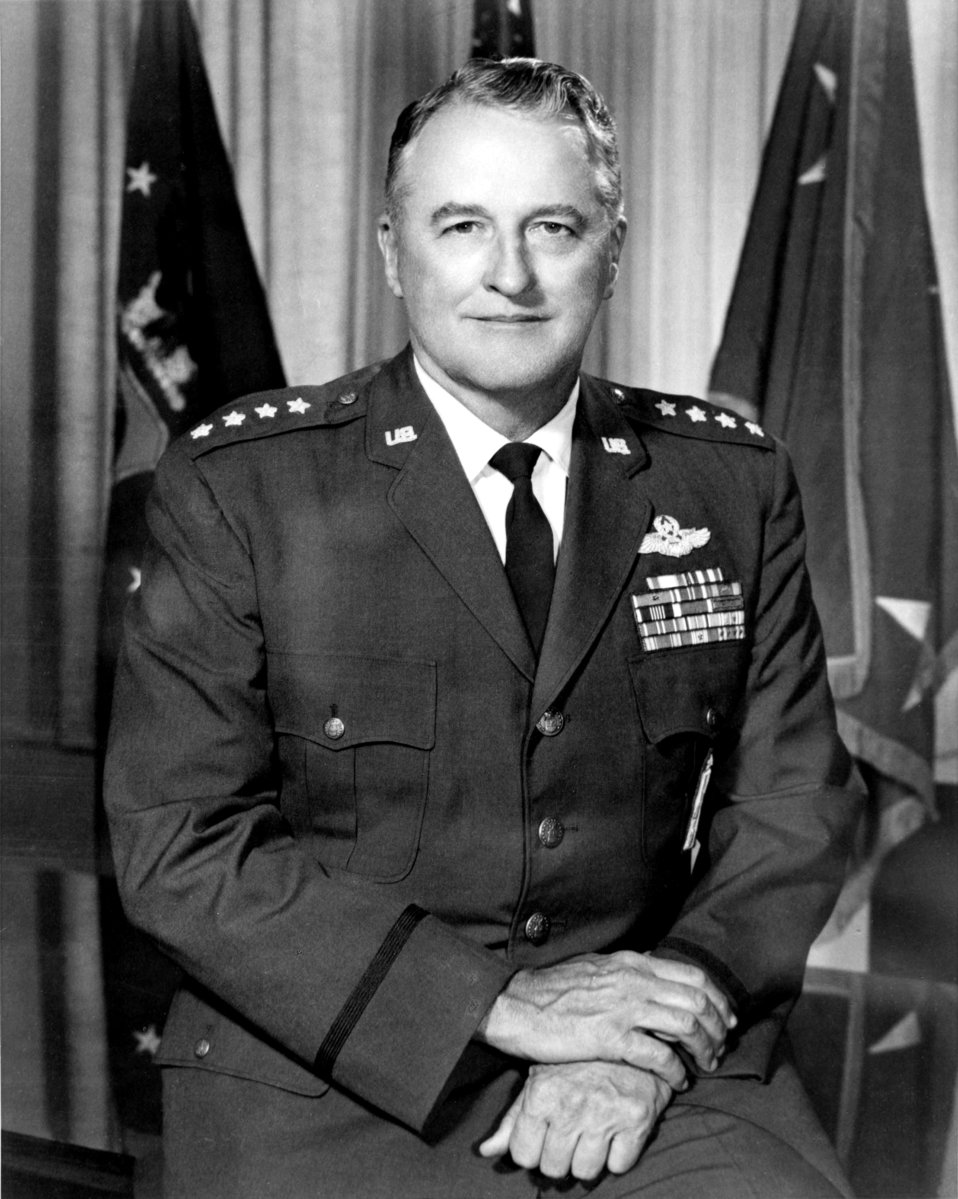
General Carlton

Gen. Paul K. Carlton, former commander of the Military Airlift Command, passed away in San Antonio Nov. 23, 2009, at the age of 88. General Carlton was commander of MAC from Sept. 26, 1972, to March 31, 1977.